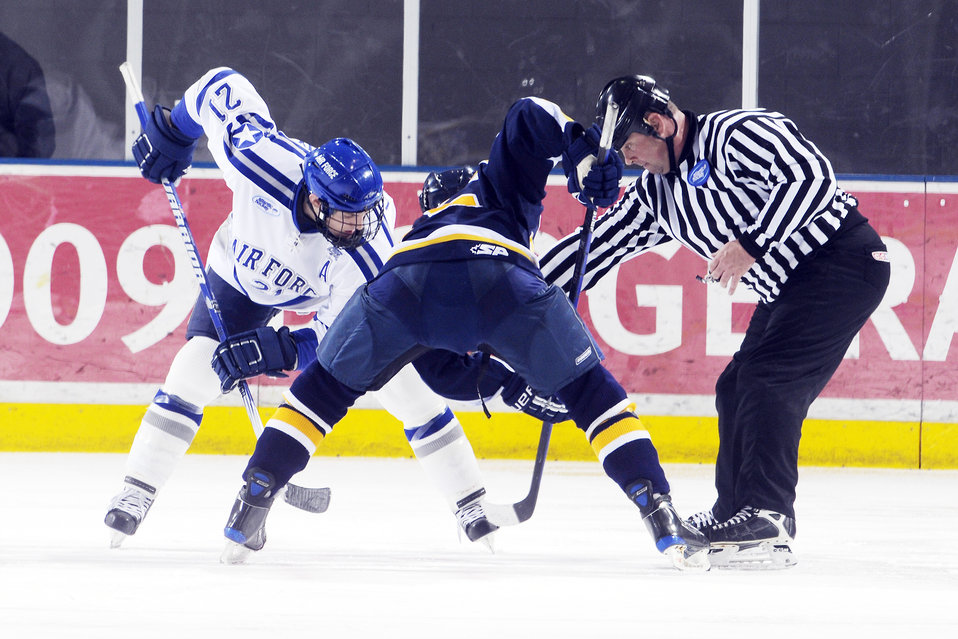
Air Force Academy

U.S. Air Force Academy, CO -- Junior forward Jacques Lamoureux squares off in a faceoff as Air Force blanked Bentley 3-0 at the Cadet Ice Arena Nov 7. Air Force is 4-5-1 overall and 4-1-1 in the Atlantic Hockey Association. Air Force plays its next four games on the road, starting with a two-game series at Holy Cross, Friday and Saturday in Worcester, Mass.